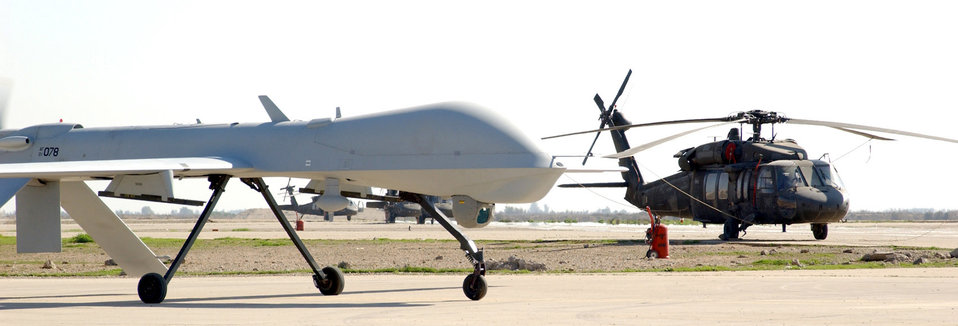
Predator

BALAD AIR BASE, Iraq -- An RQ-1 Predator unmanned aerial vehicle taxis to the runway before it begins a mission supporting Operation Iraqi Freedom.